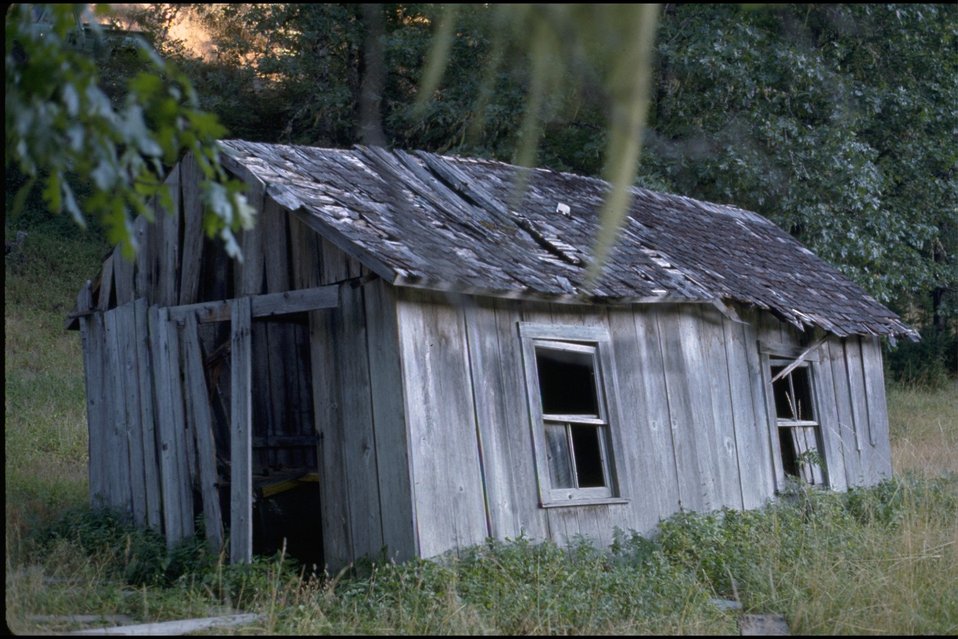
Rogue River - Cabin.